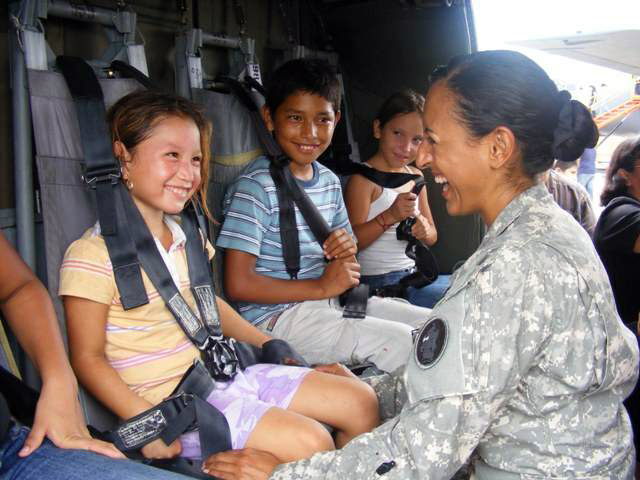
Honduras airshow aids local hospital

Army Capt. Vijay Gallardo jokes with children during a static helicopter display at an airshow June 21 at San Pedro Sula, Honduras. More than 30 Airmen and five Soldiers participated at the international airshow. Captain Gallardo is a UH-60 Black Hawk pilot assigned to Joint Task Force-Bravo.